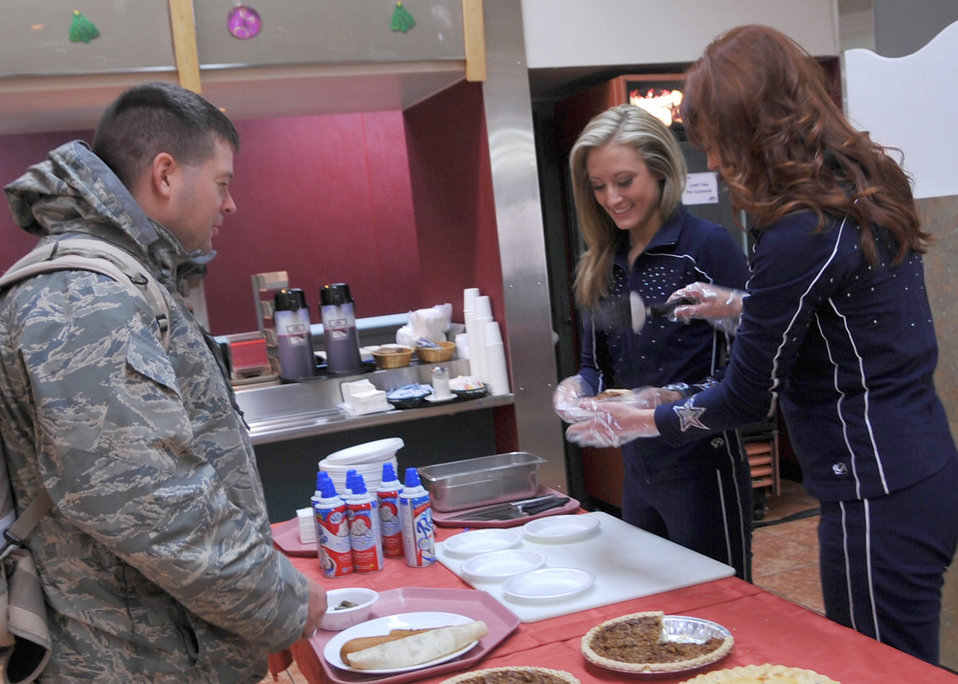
Dallas Cowboys cheerleaders serve dessert to Airmen Dec. 29, 2010, during a visit to Osan Air Base, South Korea.